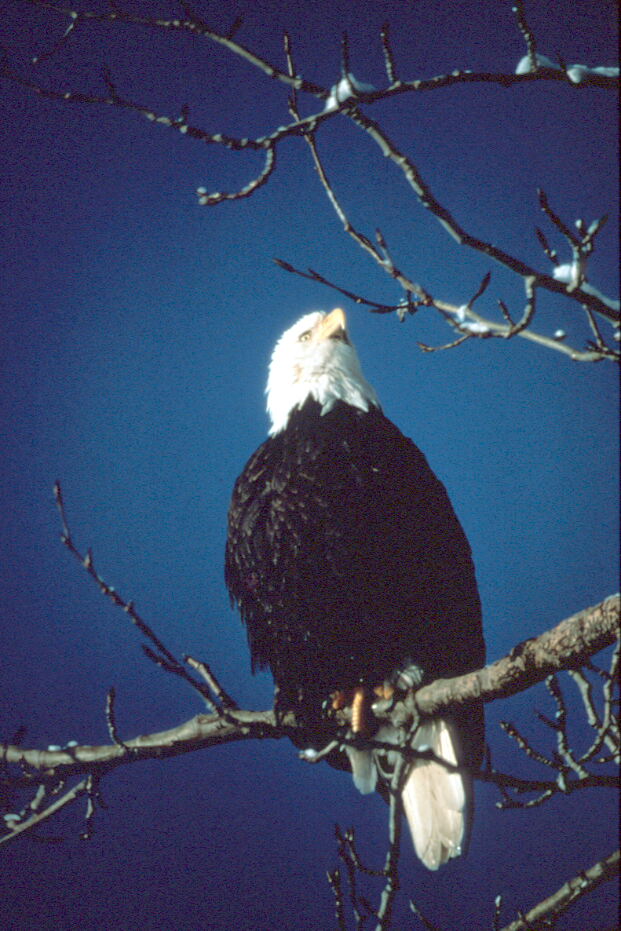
A bald eagle sitting on a tree branch

A bald eagle sitting on tree branch.